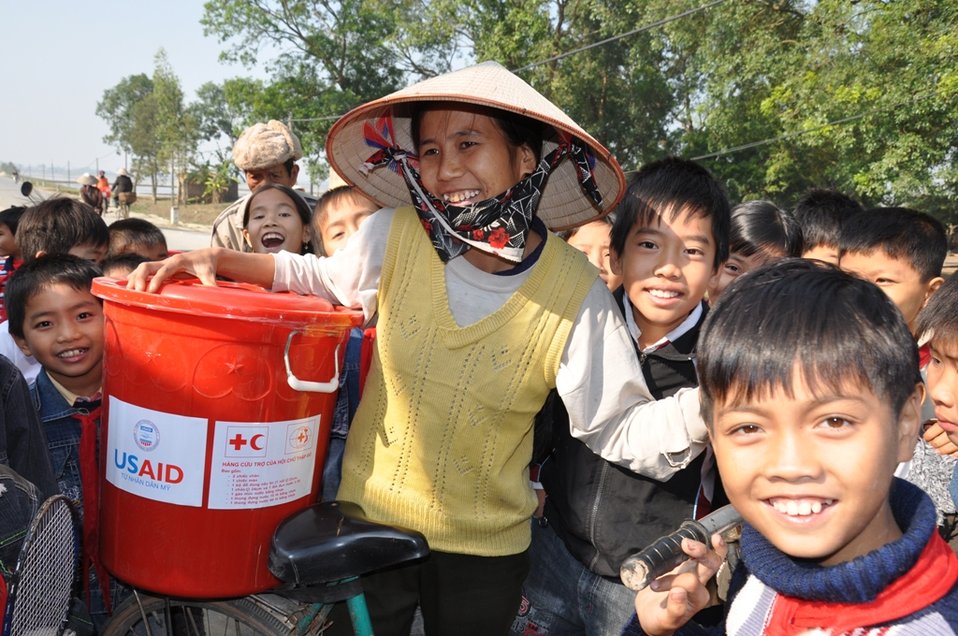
USAID provides humanitarian assistance in Vietnam

Nguyen Thi Thanh brings home USAID-funded emergency supplies after flooding near Hanoi.